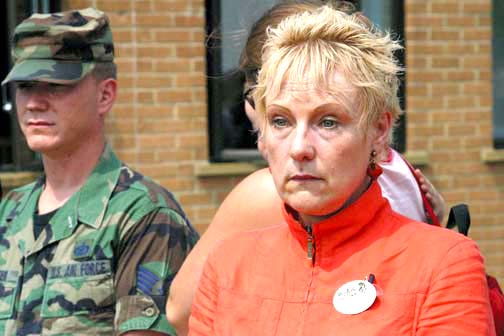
U.S. servicemembers join two-minute tribute to terrorist victims

ROYAL AIR FORCE CROUGHTON, England -- British citizen Amanda Fore joined Airmen and family members to observe a two-minute silent tribute here July 14 at noon. The tribute was done to pay respect to the people who lost their lives during the terrorist attacks in London on July 7. Ms. Fore is an assistant manager at the bowling center.